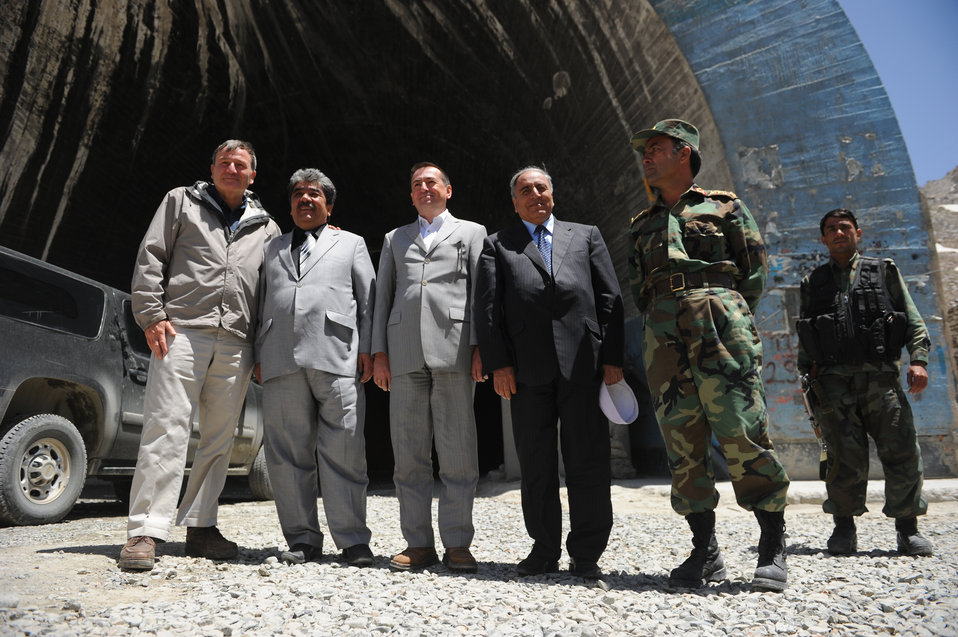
U.S. Ambassador Karl W. Eikenberry attends a ceremony to mark the beginning of renovations at the Salang Tunnel on the border of Parwan and Baghlan Provinces, Afghanistan, on Wednesday, June 15, 2011. (S.K.Vemmer/Department of State)